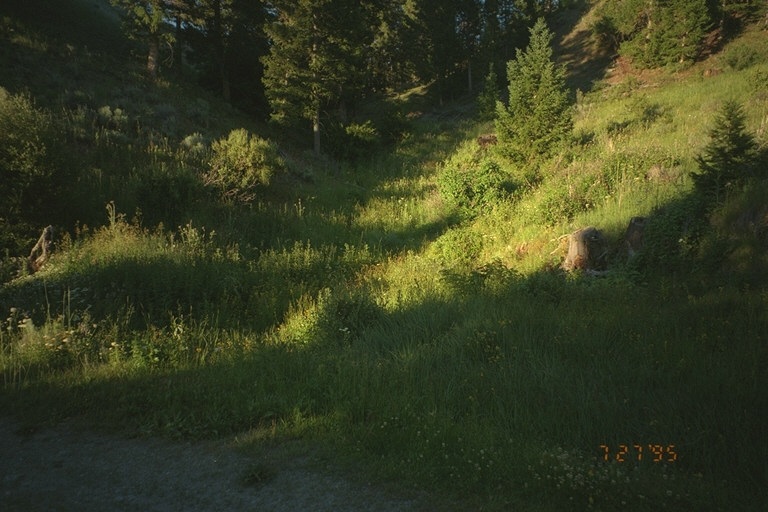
Riparian area Public Lands Salmon Field Office UCSC Upper Columbia Salmon Clearwater District